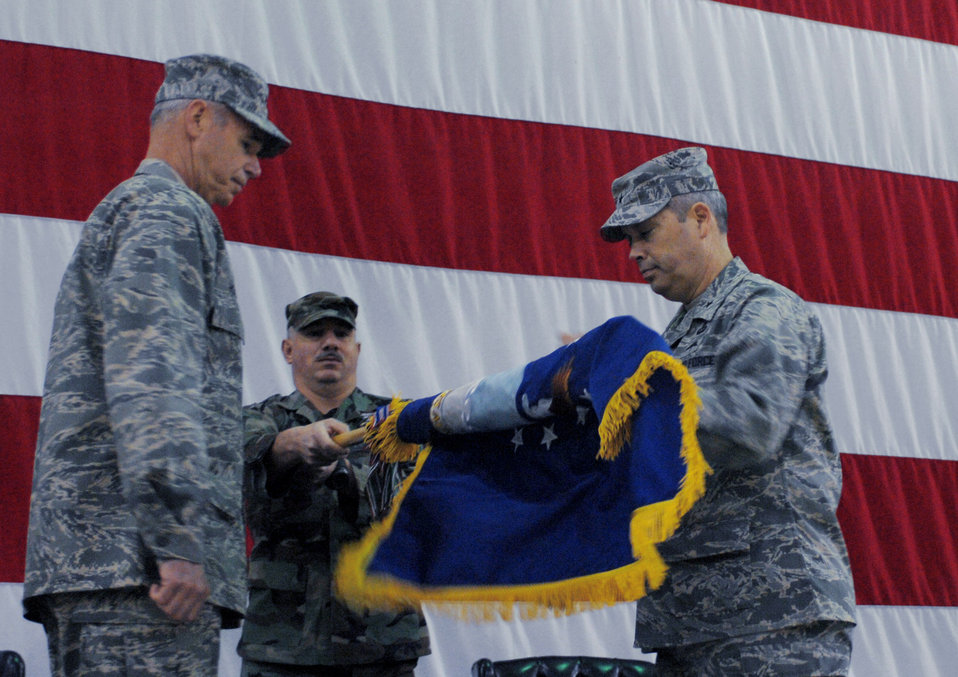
Air Force activates first Air Ground Operations Wing

Maj. Gen. William Holland and Brig. Gen. Michael Longoria unfurl the wing's flag during an activation ceremony at Moody Air Force Base, Ga., Jan. 25. The new wing consolidates the tactical air control-party and battlefield weather specialties of the 3rd Air Support Operations Group at Fort Hood, Texas, the 18th ASOG at Pope AFB, N.C., and the specialized force protection capabilities of the 820th Security Forces Group at Moody AFB. General Holland is the 9th Air Force vice commander and deputy commander of U.S. Central Command Air Forces. General Longoria is the 93rd Air Ground Operations Wing commander.